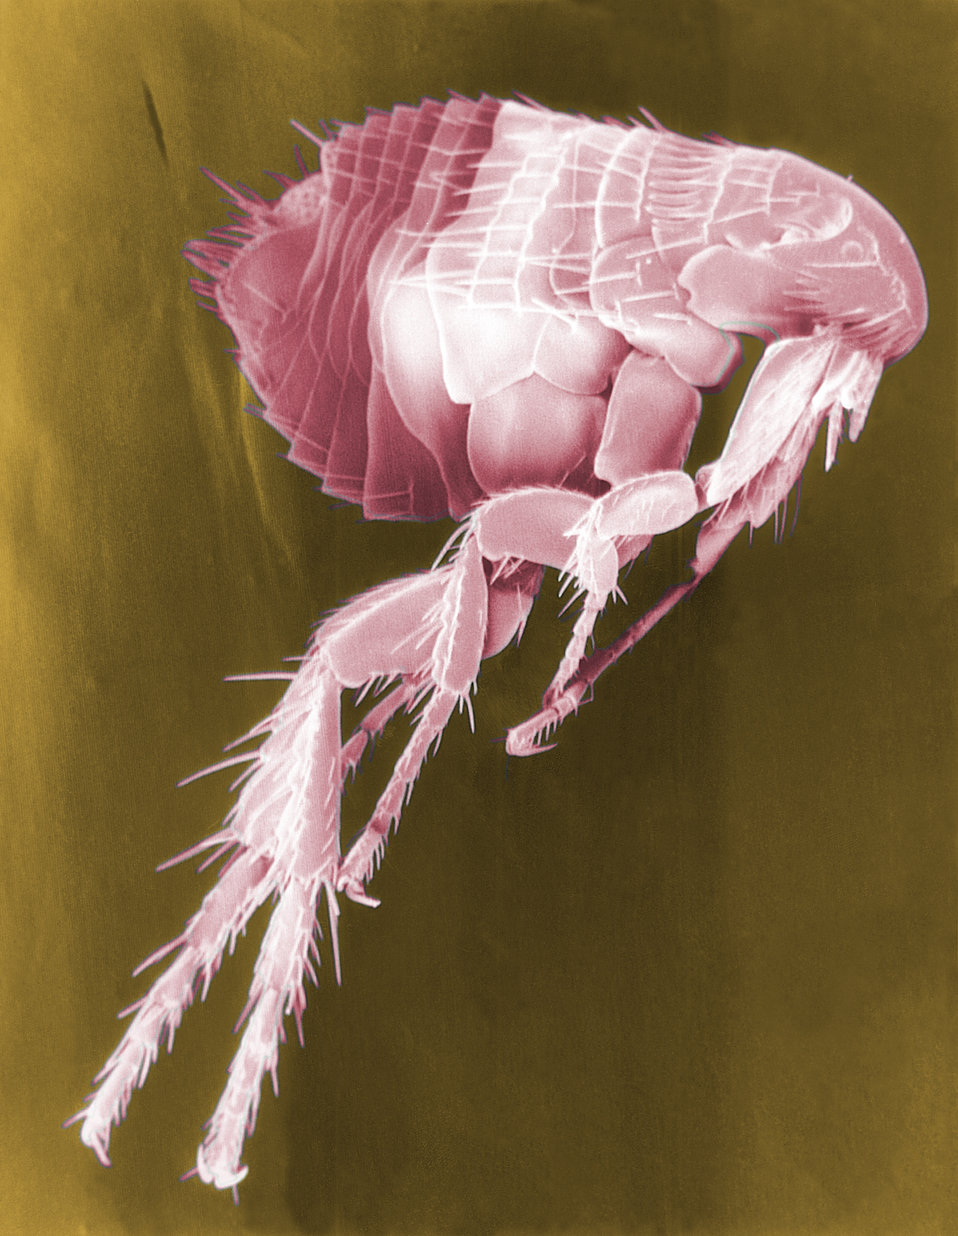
Scanning Electron Micrograph of a flea.